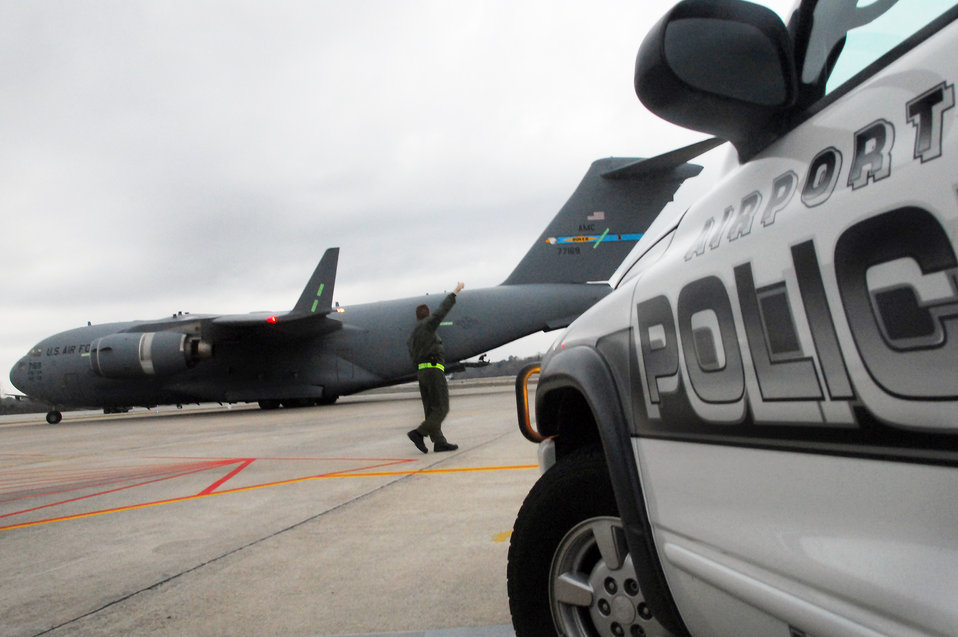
Charleston Airmen serve as liaison in Haitian repatriation effort

Lt. Col. John Donahue signals